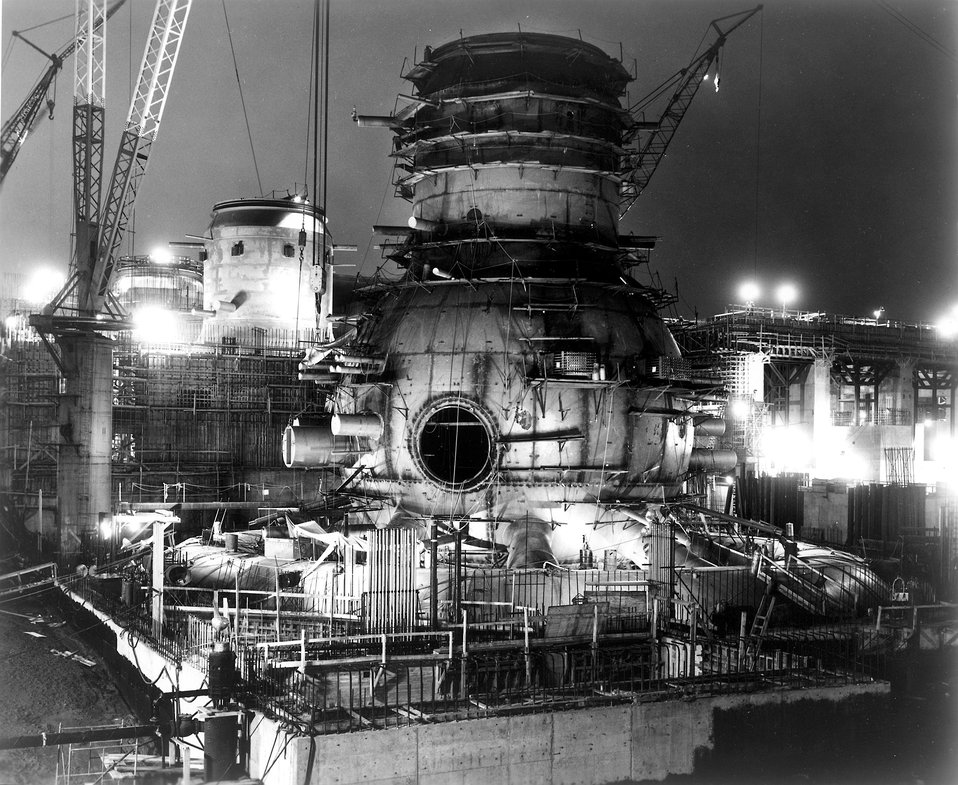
TVA Browns Ferry Nuclear Power Plant under construction at a site on Wheeler Lake, 10 miles southwest of Athens, Alabama. Circa 1970.